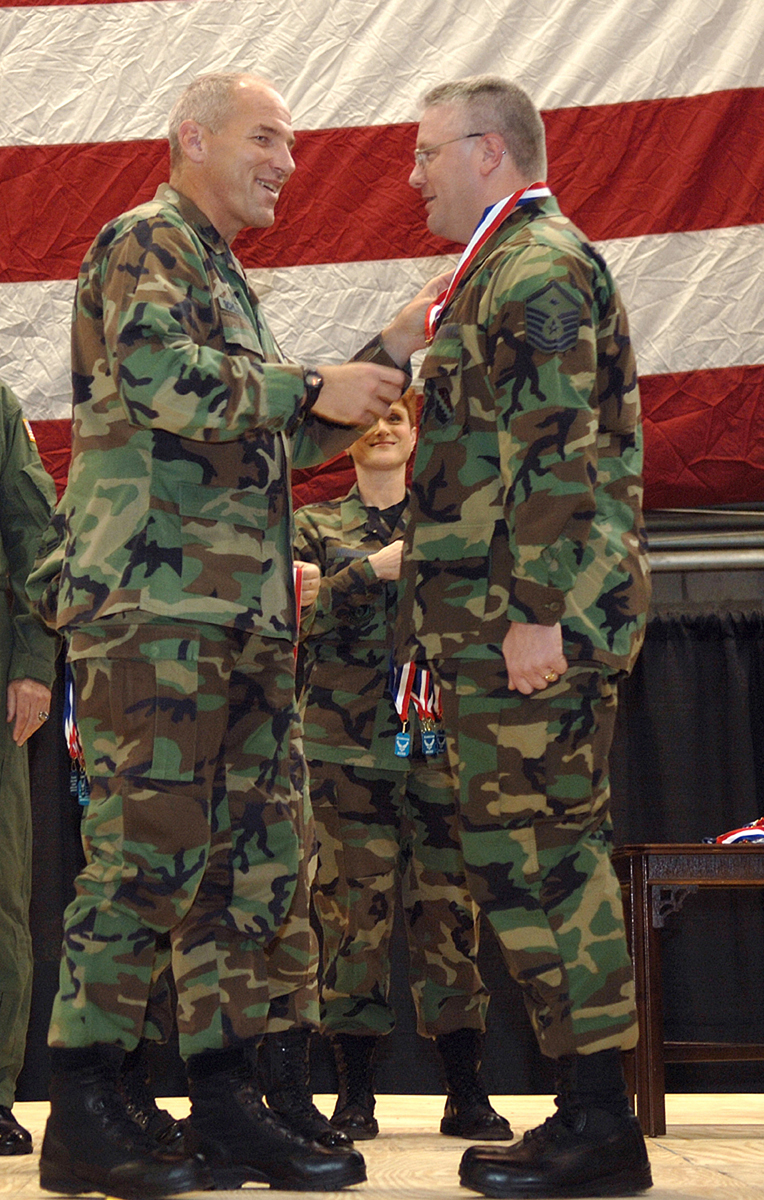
Welcome Home Heroes

66th Air Base Wing Commander Col. Tom Schluckebier presents a Heroes' Homecoming Medallion to Master Sgt. Robert Barrett, 66th Medical Group first sergeant, during the Heroes' Homecoming at Hanscom Air Force Base, Mass., Jan. 19.